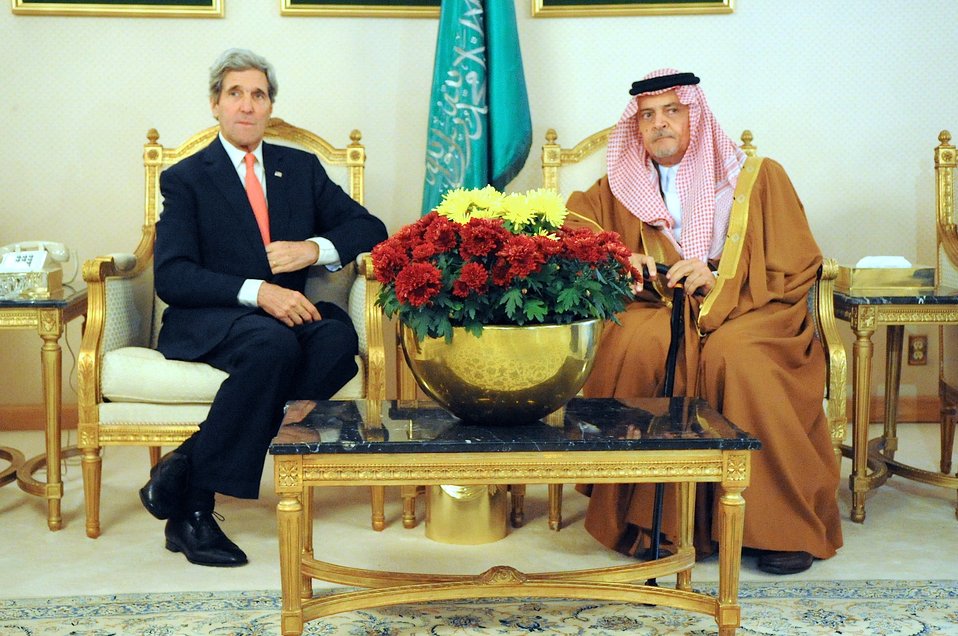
Secretary Kerry, Saudi Foreign Minister al-Faisal Participate in Coffee Ceremony

U.S. Secretary of State John Kerry sits with Foreign Minister Crown Prince Saud al-Faisal of Saudi Arabia during a traditional coffee ceremony upon his arrival in Riyadh on January 5, 2014.